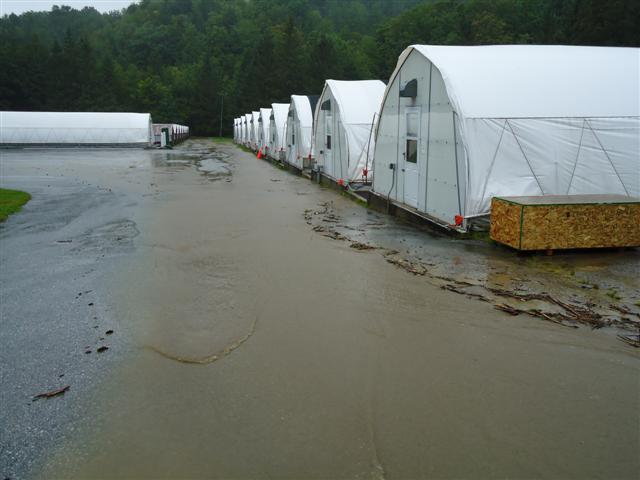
Storm damage at Eisenhower National Fish Hatchery in Vermont

Flooding at raceways.